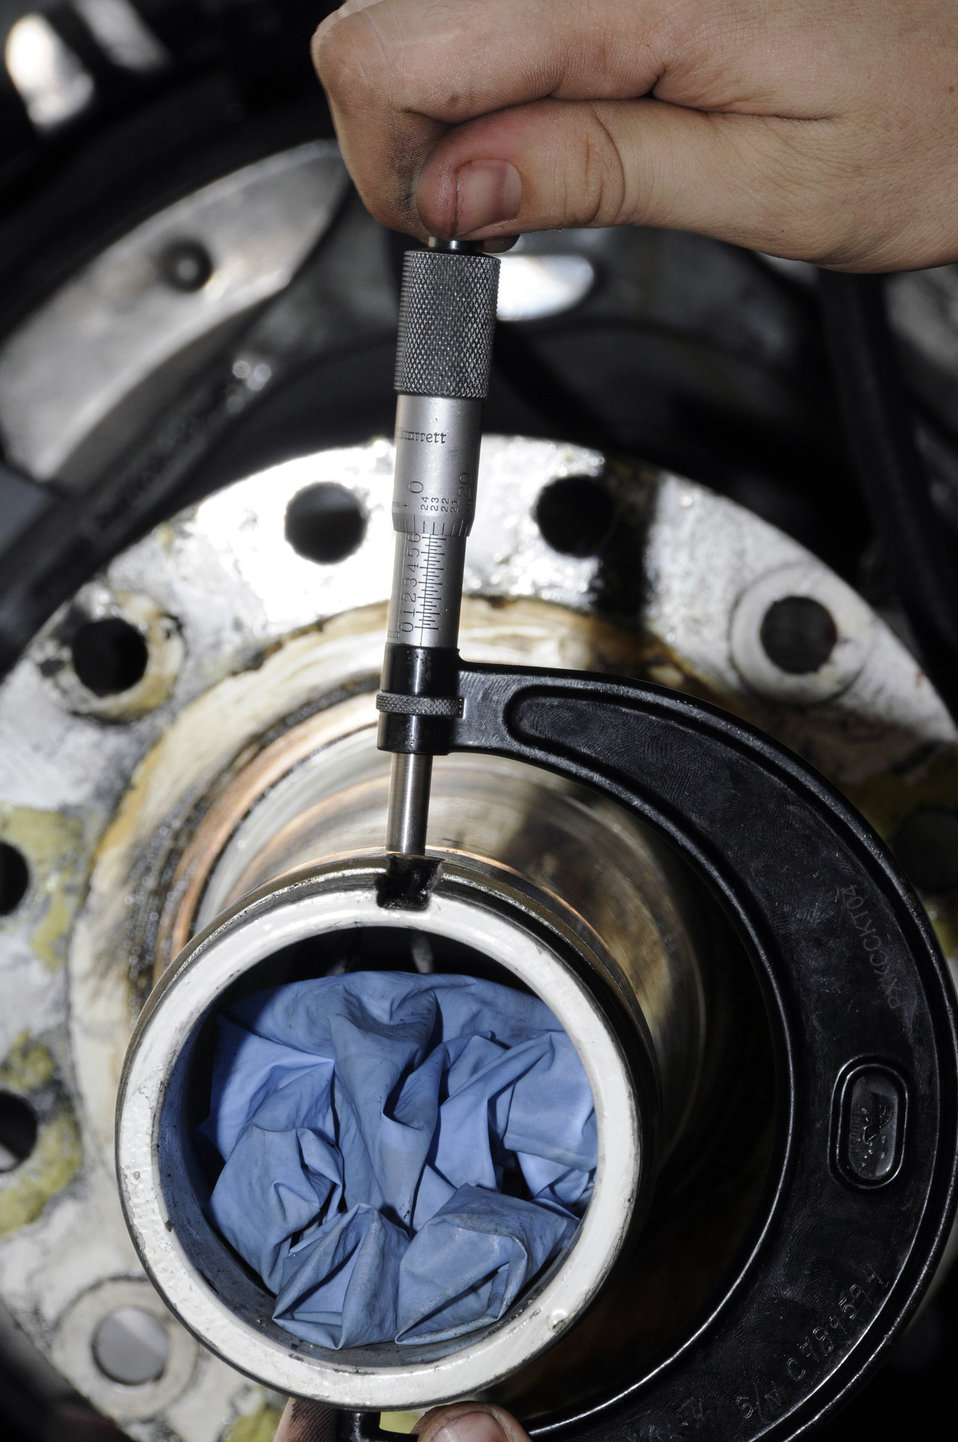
Brake it down

Tech. Sgt. Chris Reiter checks the tolerance on a KC-135 Stratotanker landing gear axle Sept. 28 at an air base in Southwest Asia. The tolerance is checked at both the front and rear to assure it is still within limits. The brake set had to be replaced when a crack in the heat shield was detected during a post-flight inspection. Sergeant Reiter, a native of Farmington, N.M., is deployed from Fairchild Air Force Base, Wash. He is assigned to the 379th Expeditionary Aircraft Maintenance Squadron.